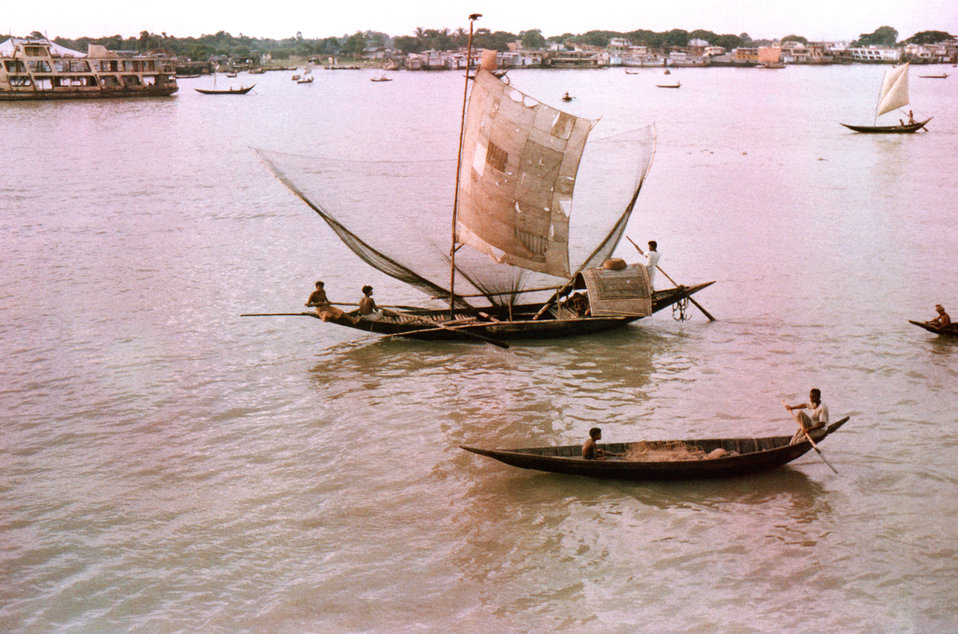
Depicted here in this September, 1975 image, were river craft using the Meghna River as a mode of transport, and industry. Included in this particular view with its large net, was a fishing boat, which was along-side 'sampan', or ferryboat.